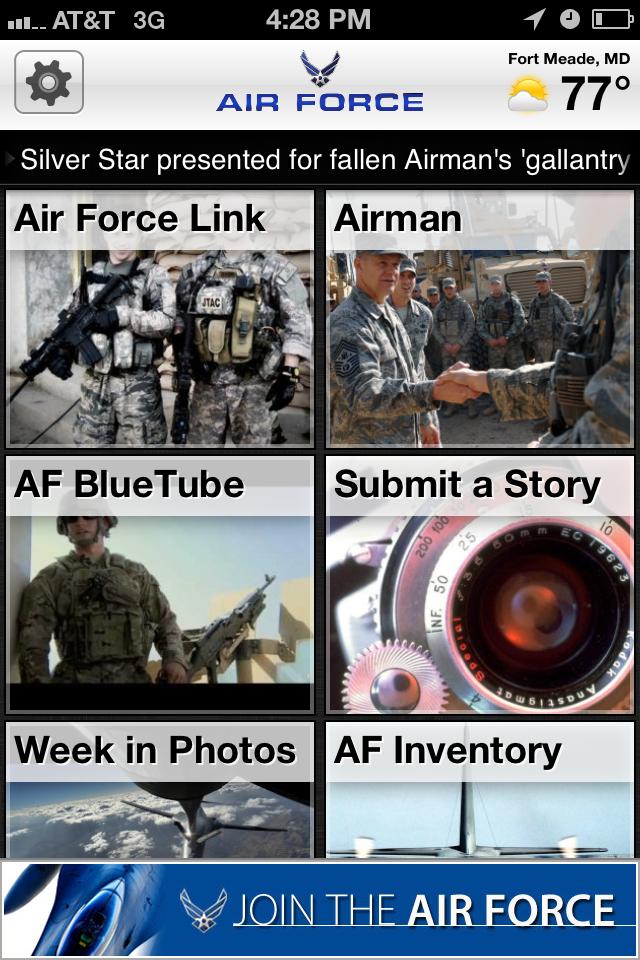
AFLINK mobile application now available

The front page of the AFLINK mobile application.